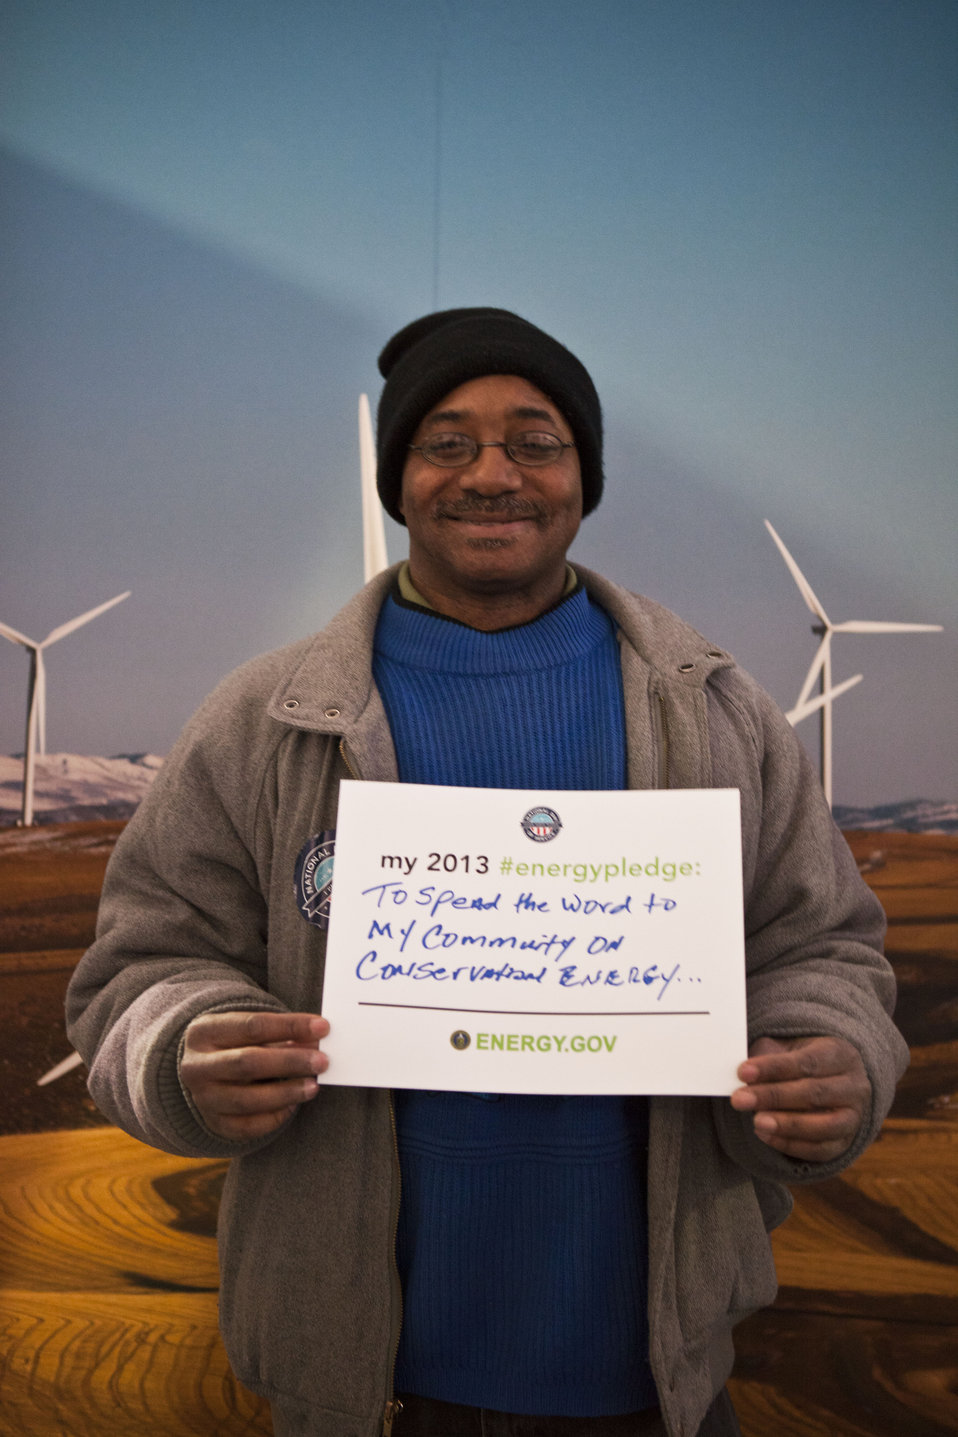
What's your #energypledge?